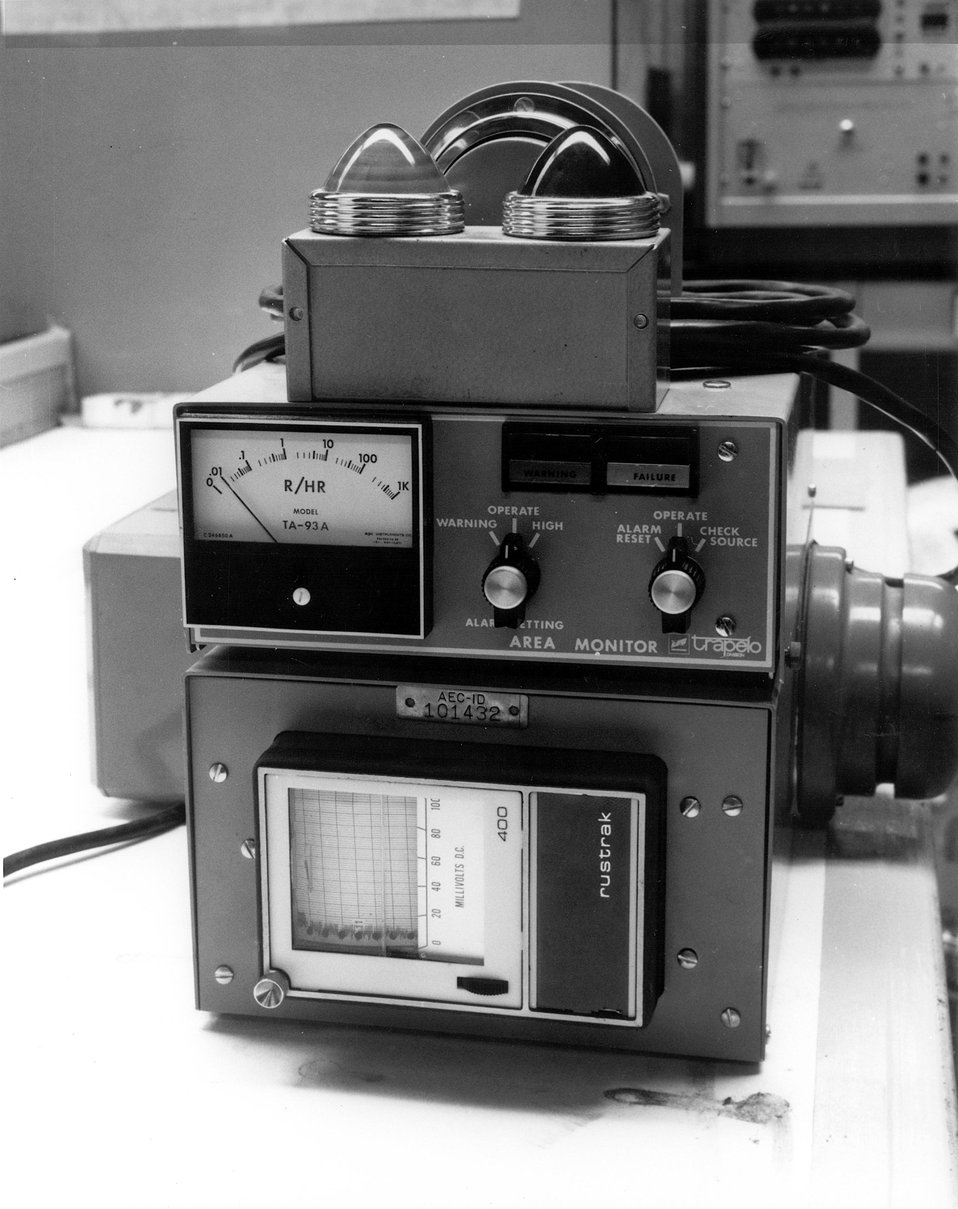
A dual alarm radiation monitor at the Atomic Energy Commission's National Reactor Testing Station in Idaho. Circa 1974.